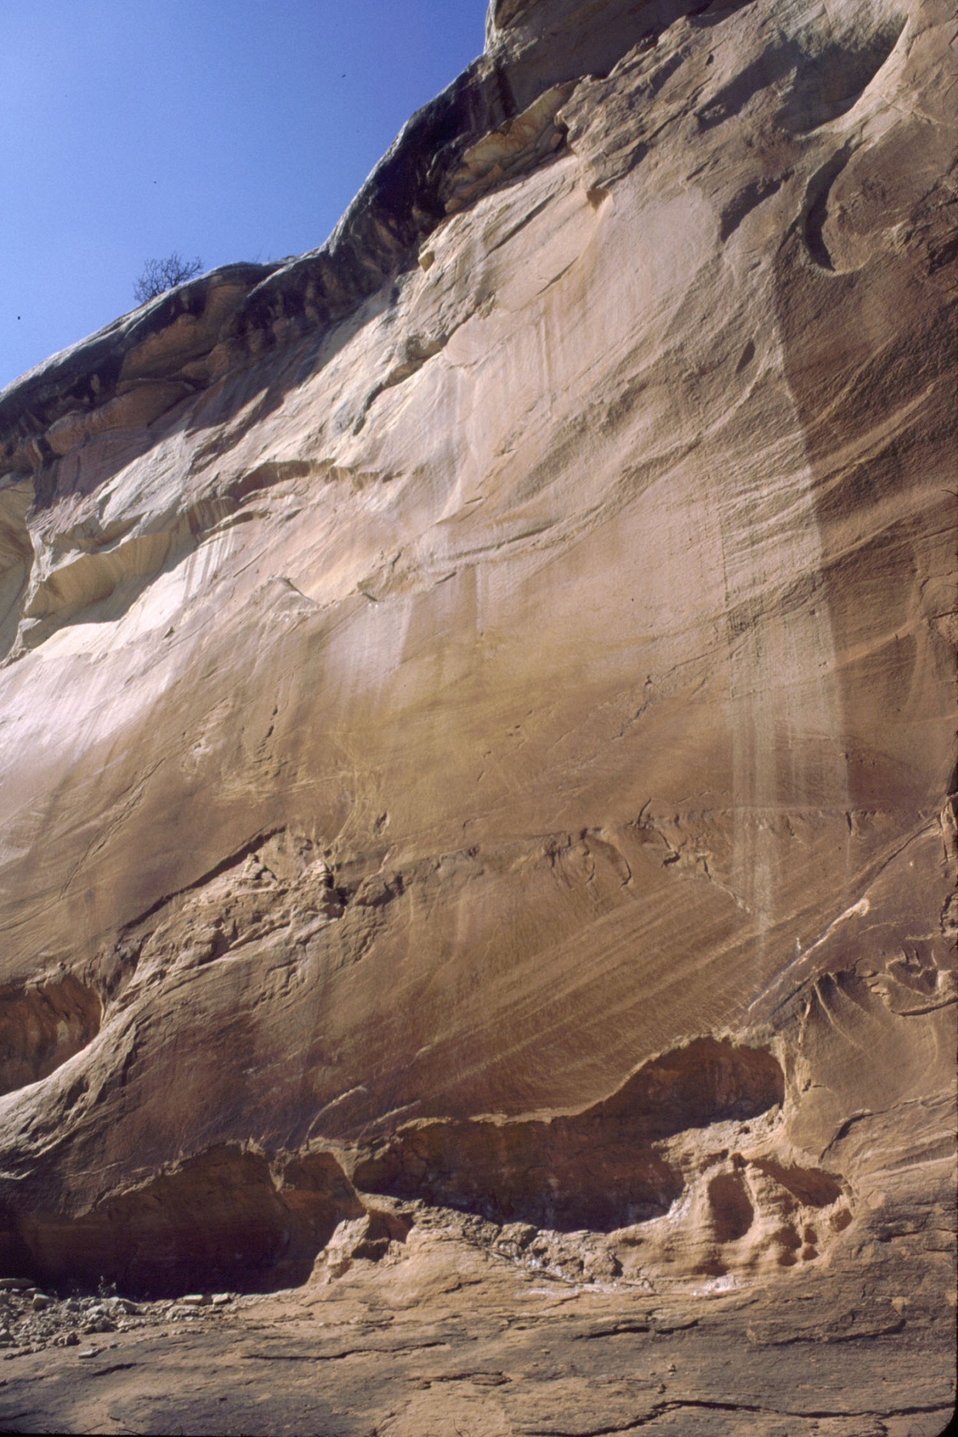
McDonald Creek